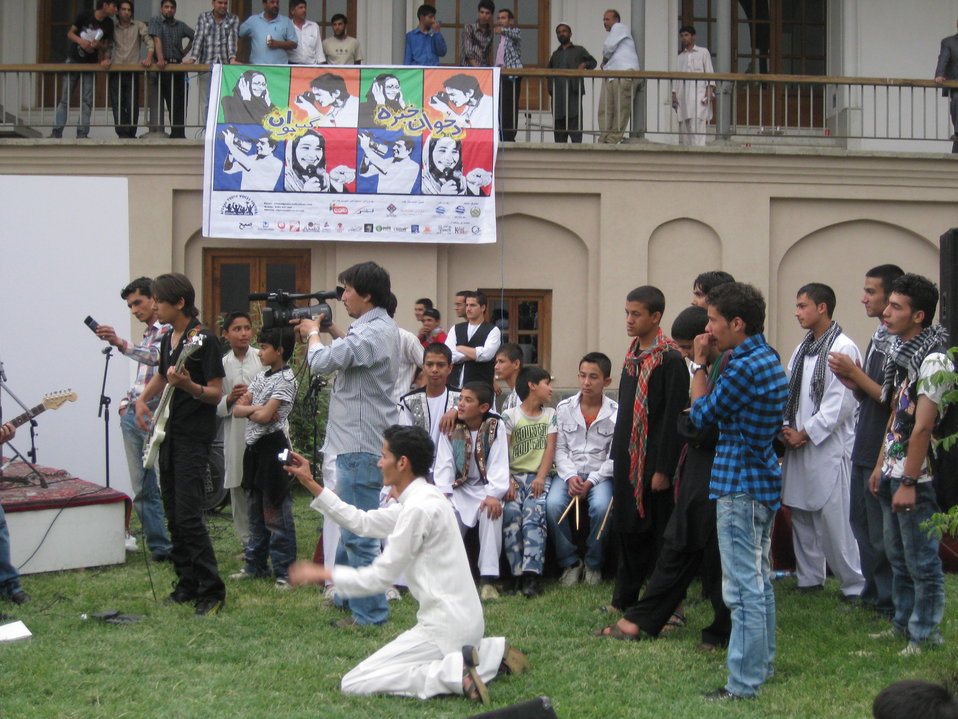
Afghan Youth Voices 111